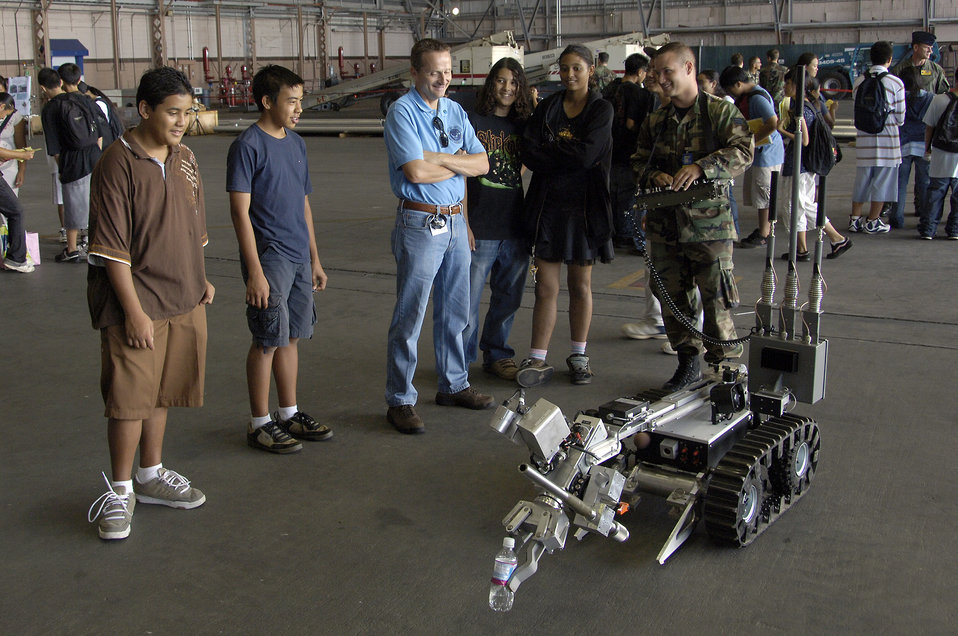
Hickam hosts Education Day

Senior Airman Robert Webster demonstrates the HD-1 Robotic Platform for students during Education Day at Hickam Air Force Base, Hawaii, Sept. 13. The Air Force hosted the day for Hawaii public school math and science students as part of Air Force Week Honolulu, to commemorate the U.S. Air Force's 60th Anniversary. Airman Webster is an explosive ordnance technician from the 15th Air Wing Civil Engineering Squadron.